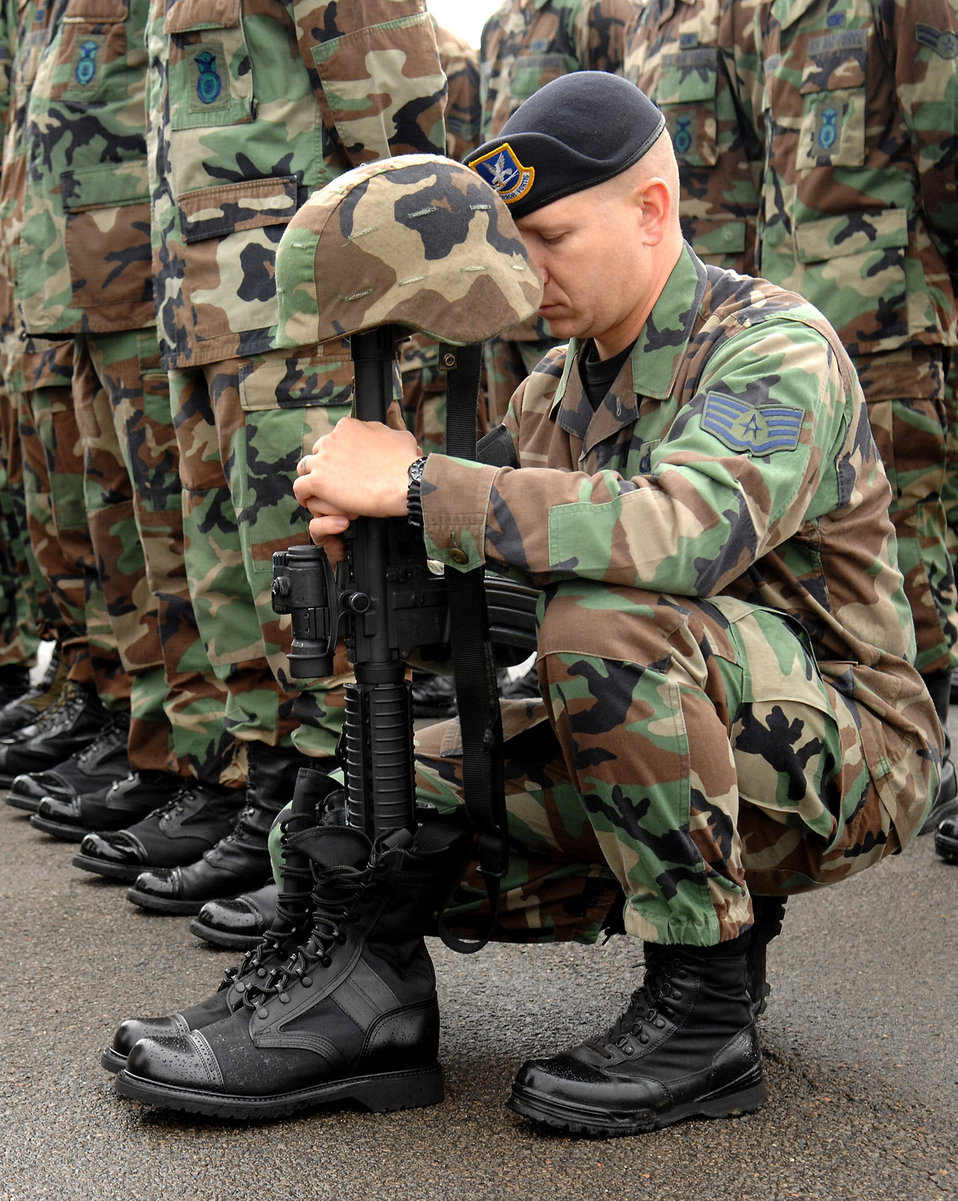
Saying farewell

Staff Sgt. Robert Culbertson pays his respects during a Final Guard Mount ceremony May 16 at Ramstein Air Base, Germany. The ceremony, which recognizes fallen security forces Airmen, was held in conjunction with National Police Week. Sergeant Culbertson is assigned to the 435th Security Forces Squadron.